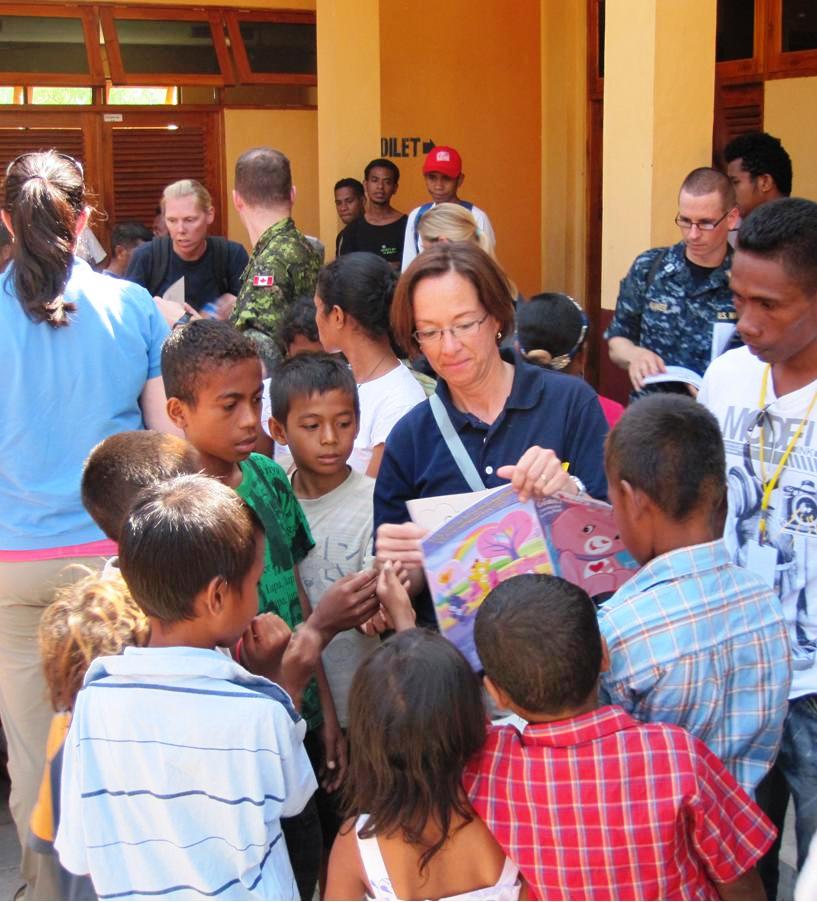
Commodore Franchetti and PP2010 Personnel Visit an Orphanage

Commodore Lisa Franchetti, Pacific Partnership 2010 Mission Commander, and PP2010 personnel visit an orphanage in Dili, Timor-Leste, in September 2010 as part of Pacific Partnership 2010.